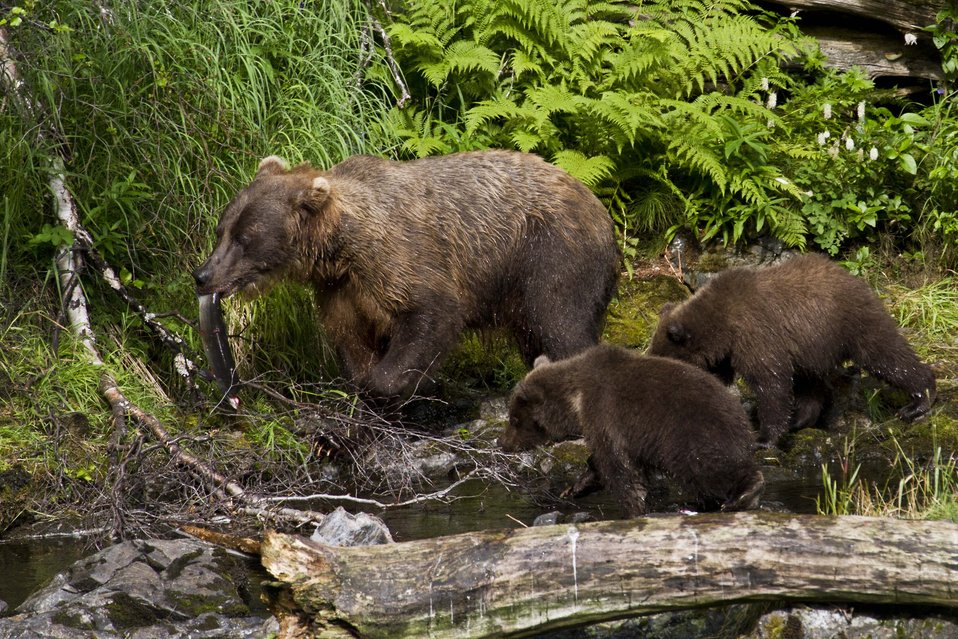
Bear sow and cubs

A brown bear sow prepares to share a fresh-caught fish with her cubs near the confluence of the Kenai and Russian Rivers in Alaska. Interactions between bears and humans are a favorite topic of the Kenai Refuge Notebook, written by staff at the Kenai National Wildlife Refuge and published weekly in the Peninsula Clarion newspaper since 1999. (Berkely Bedell)